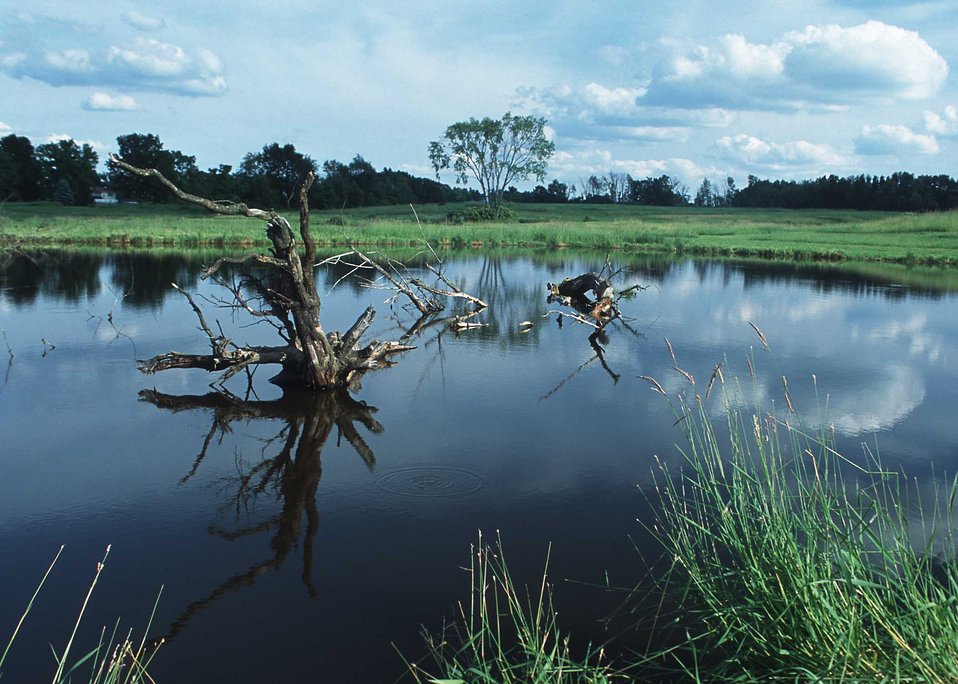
A scenic wetland landscape

A scenic open water wetland with water in foreground, Montcalm County, Michigan.